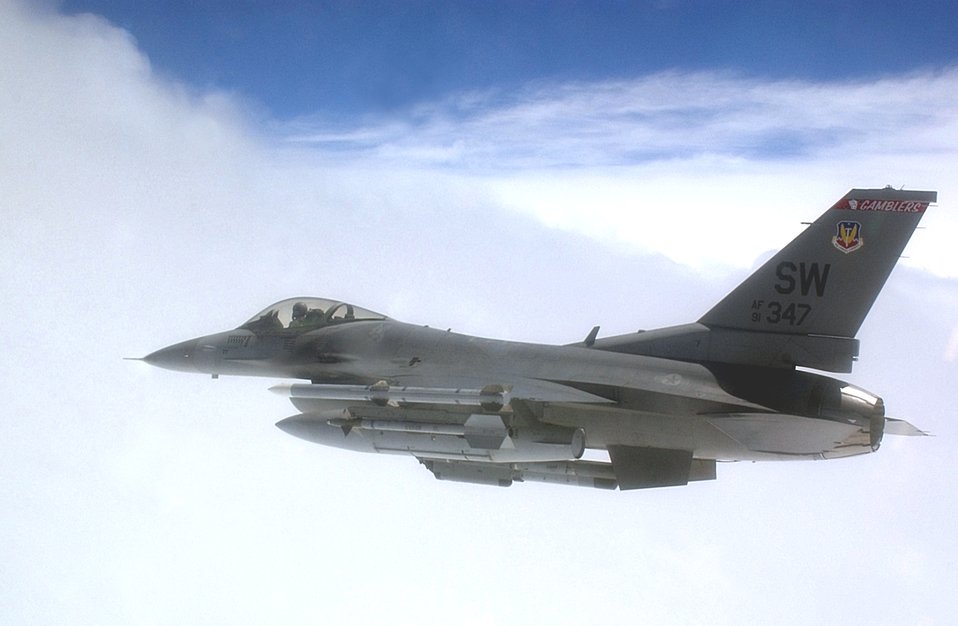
Routine Mission

SHAW AIR FORCE BASE, S.C. - An F-16 from the 77th Fighter Squadron flies to Arlington National Cemetery to perform a fly-by May 3.